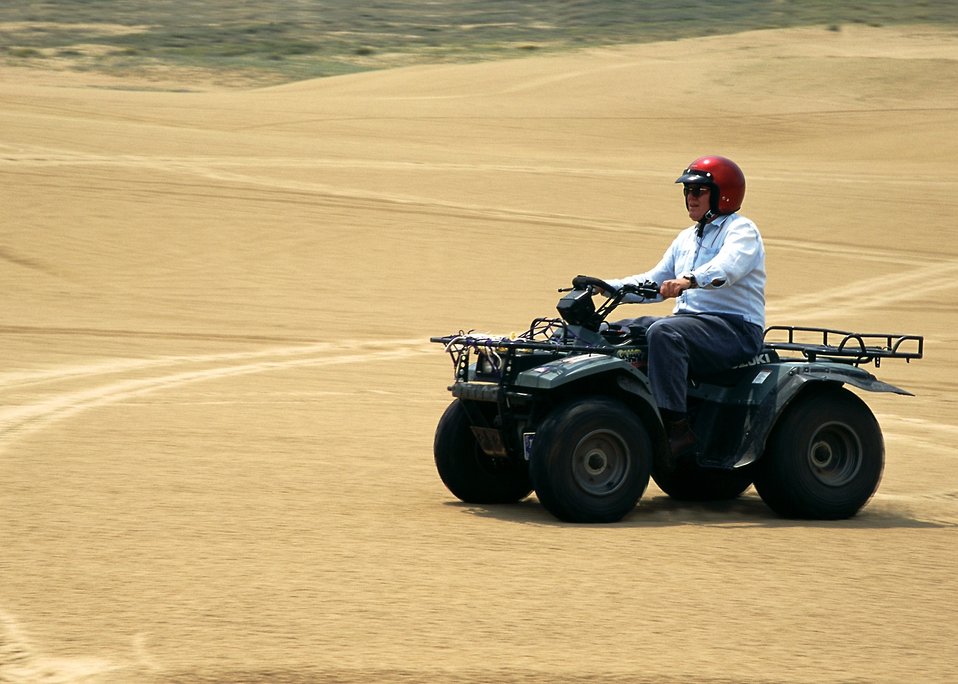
Sand Hills OHV (Dunes)